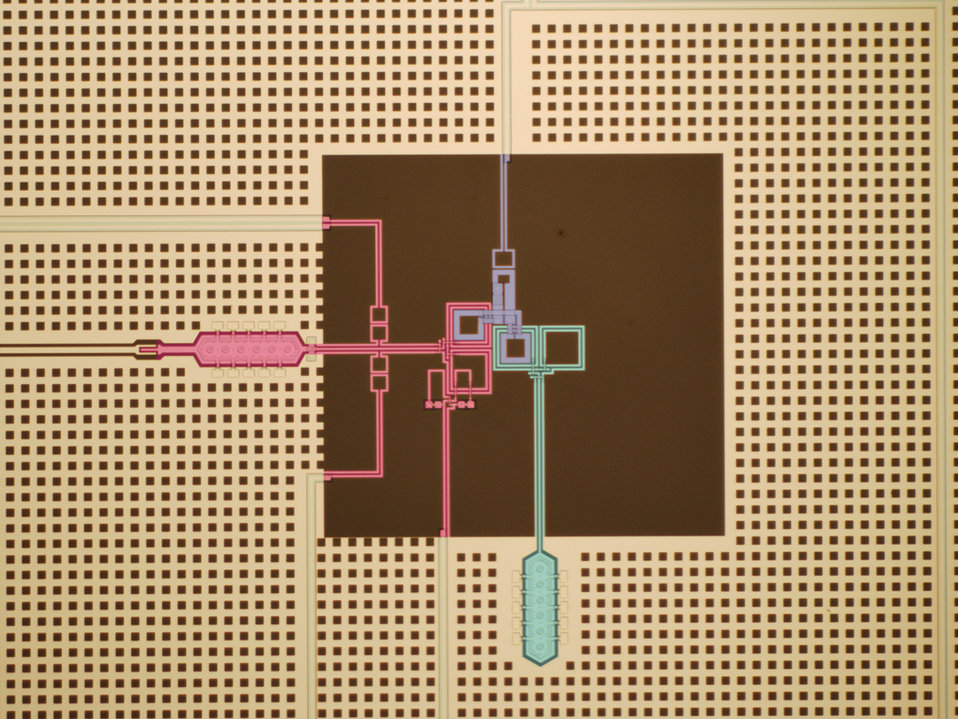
Dimmer switch

Colorized micrograph of superconducting circuit used in NIST quantum computing research. The chip combines a quantum bit (pink) for storing quantum information, a quantum bus (green) for transporting information, and a switch (purple) that tunes interactions between the other two components.